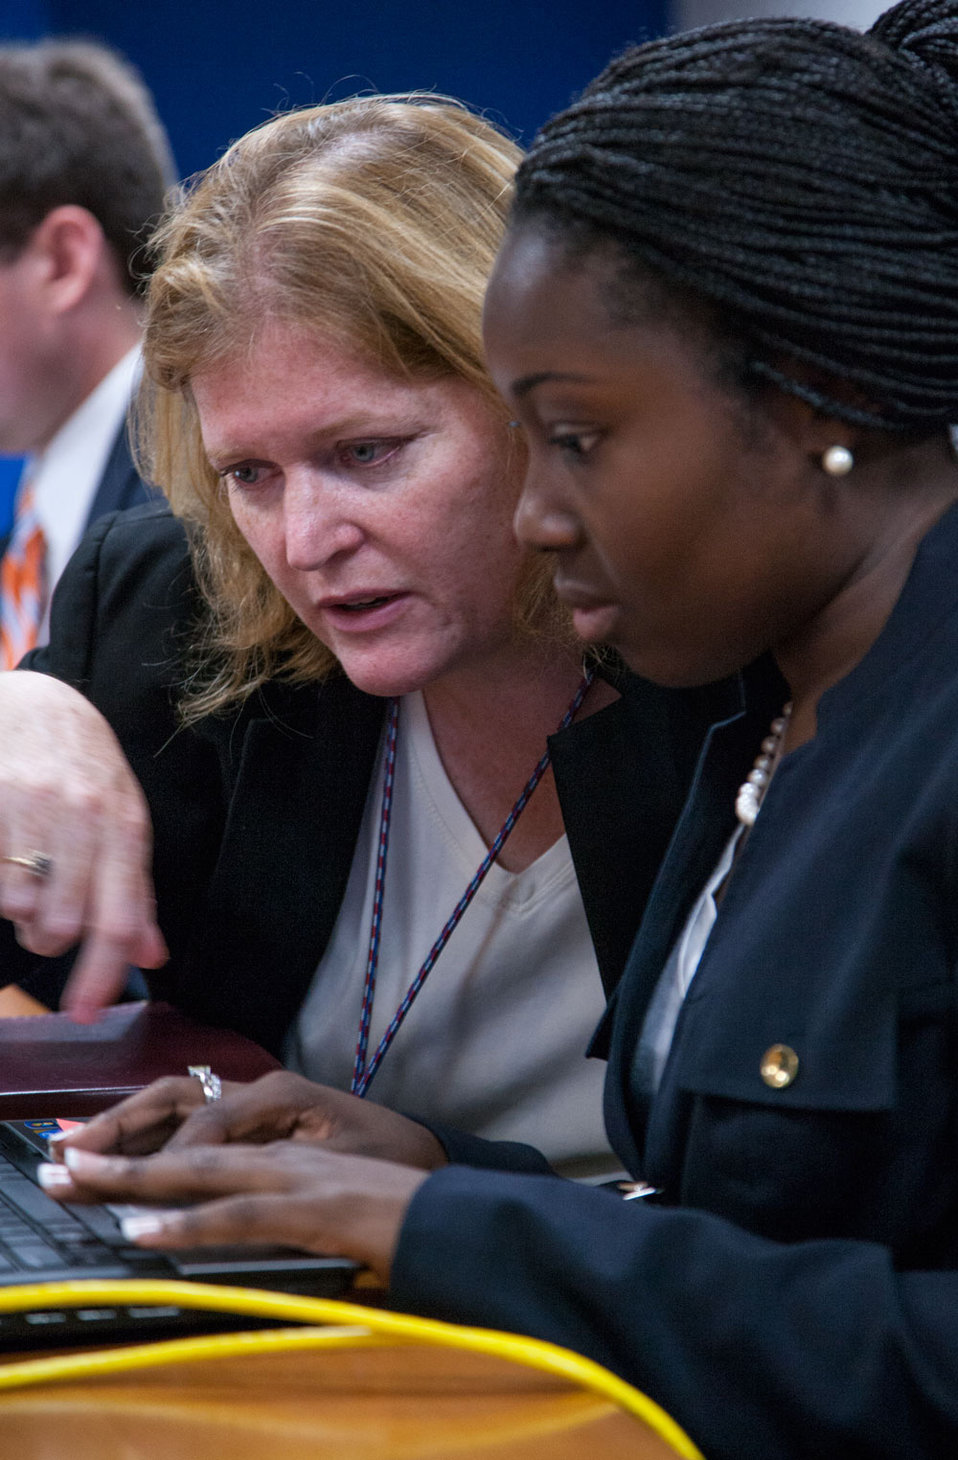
Assistant Secretary Richard Responds to Questions on Twitter

Assistant Secretary of State for Population, Refugees, and Migration Anne Richard responds to questions submitted on Twitter to @StateDept on World Refugee Day at the U.S. Department of State in Washington, D.C., June 20, 2012.